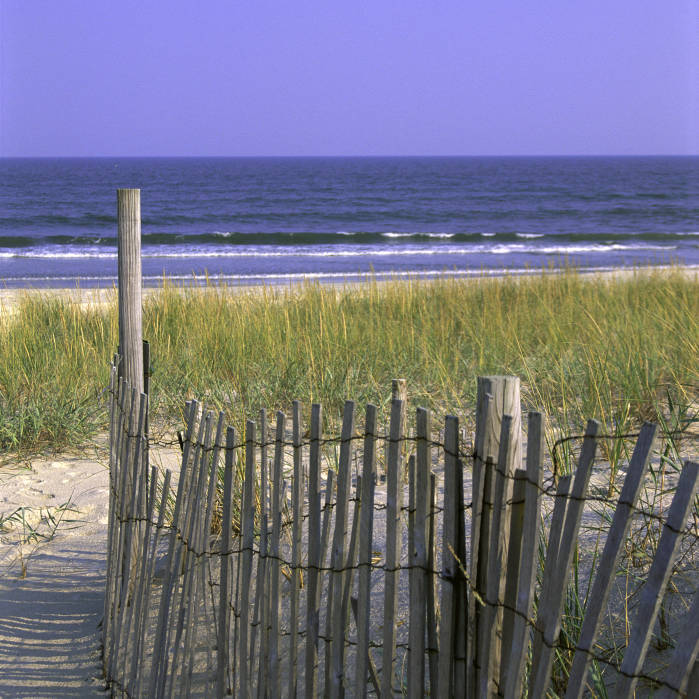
Beach at Chincoteague National Wildlife Refuge, located at the southern end of Assateague Island, Virginia.